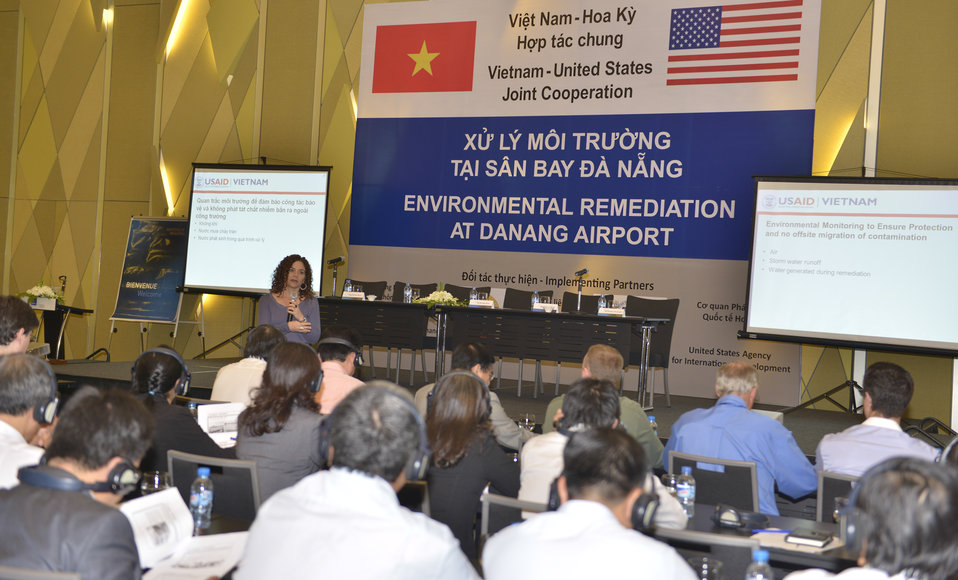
Community Outreach Session on Environmental Remediation of Dioxin Contamination at Danang Airport Project

Danang, March 25, 2014.